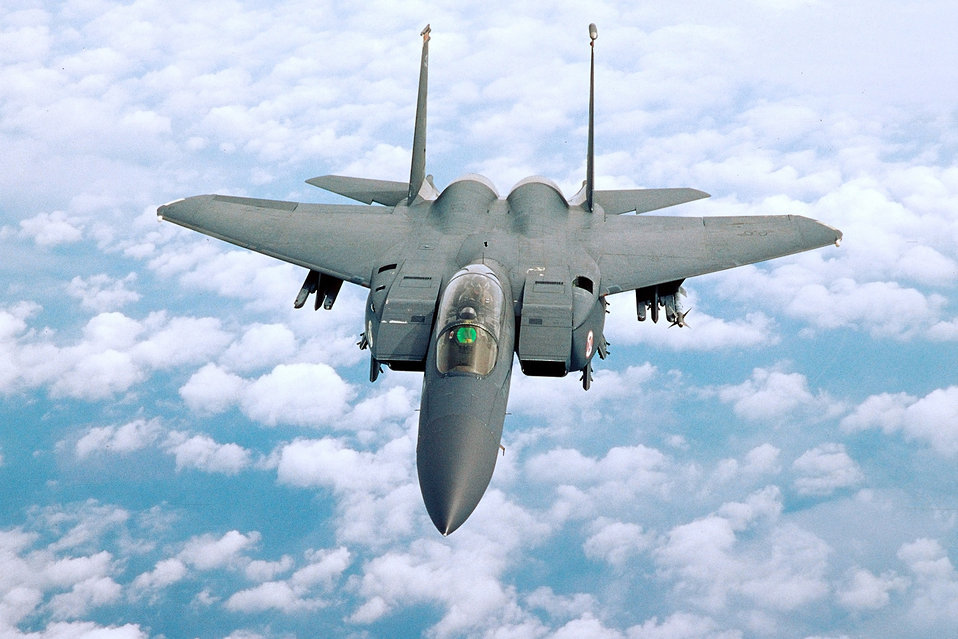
F-15E

FILE PHOTO -- An F-15E Strike Eagle from the 4th Fighter Wing, Seymour Johnson Air Force Base, N.C.